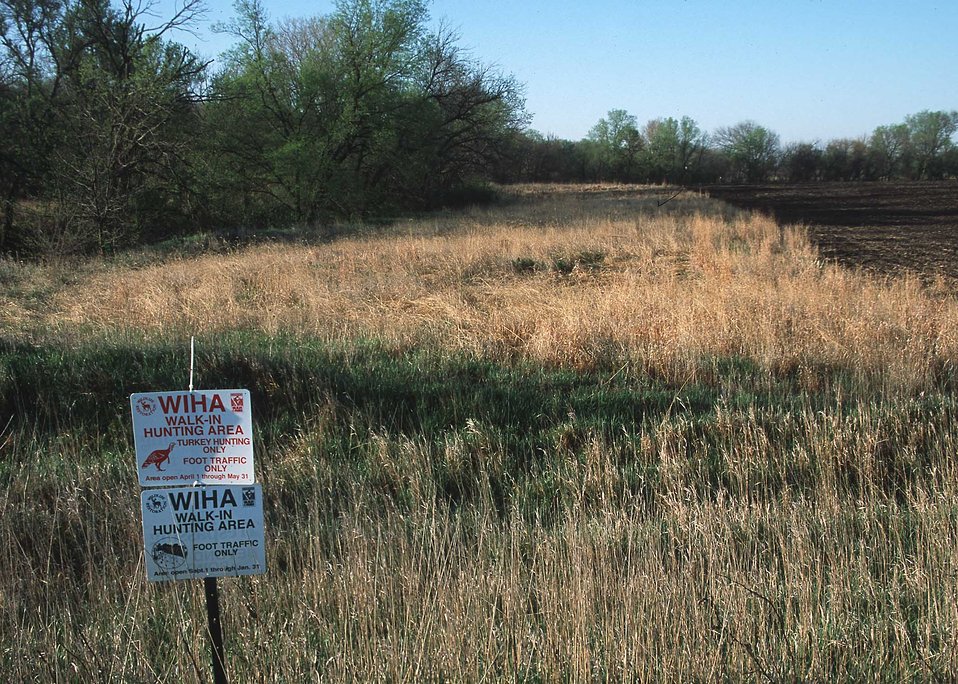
Conservation buffers seeded to Prairie grasses border riparian habitat and a cultivated field. Kansas.